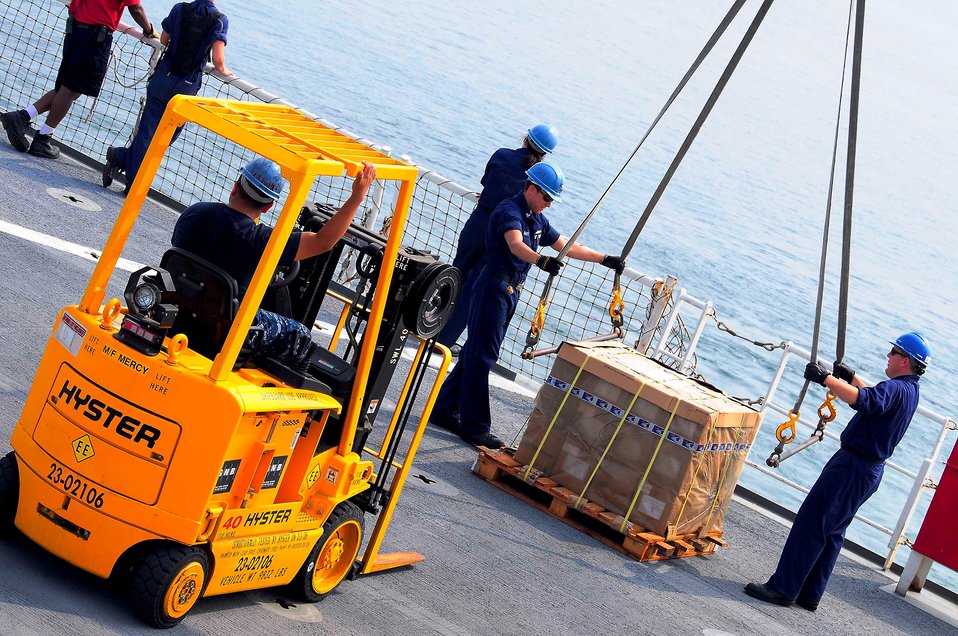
Sailors remove crane-securing straps from a pallet of medical supplies on the flight deck of the Military Sealift Command hospital ship USNS Mercy (T-AH 19) during a stores onload in support of Pacific Partnership 2010 on July 7, 2010. Mercy is en route to Indonesia during the fifth in a series of annual U.S. Pacific Fleet humanitarian and civic assistance endeavors to strengthen regional partnerships.